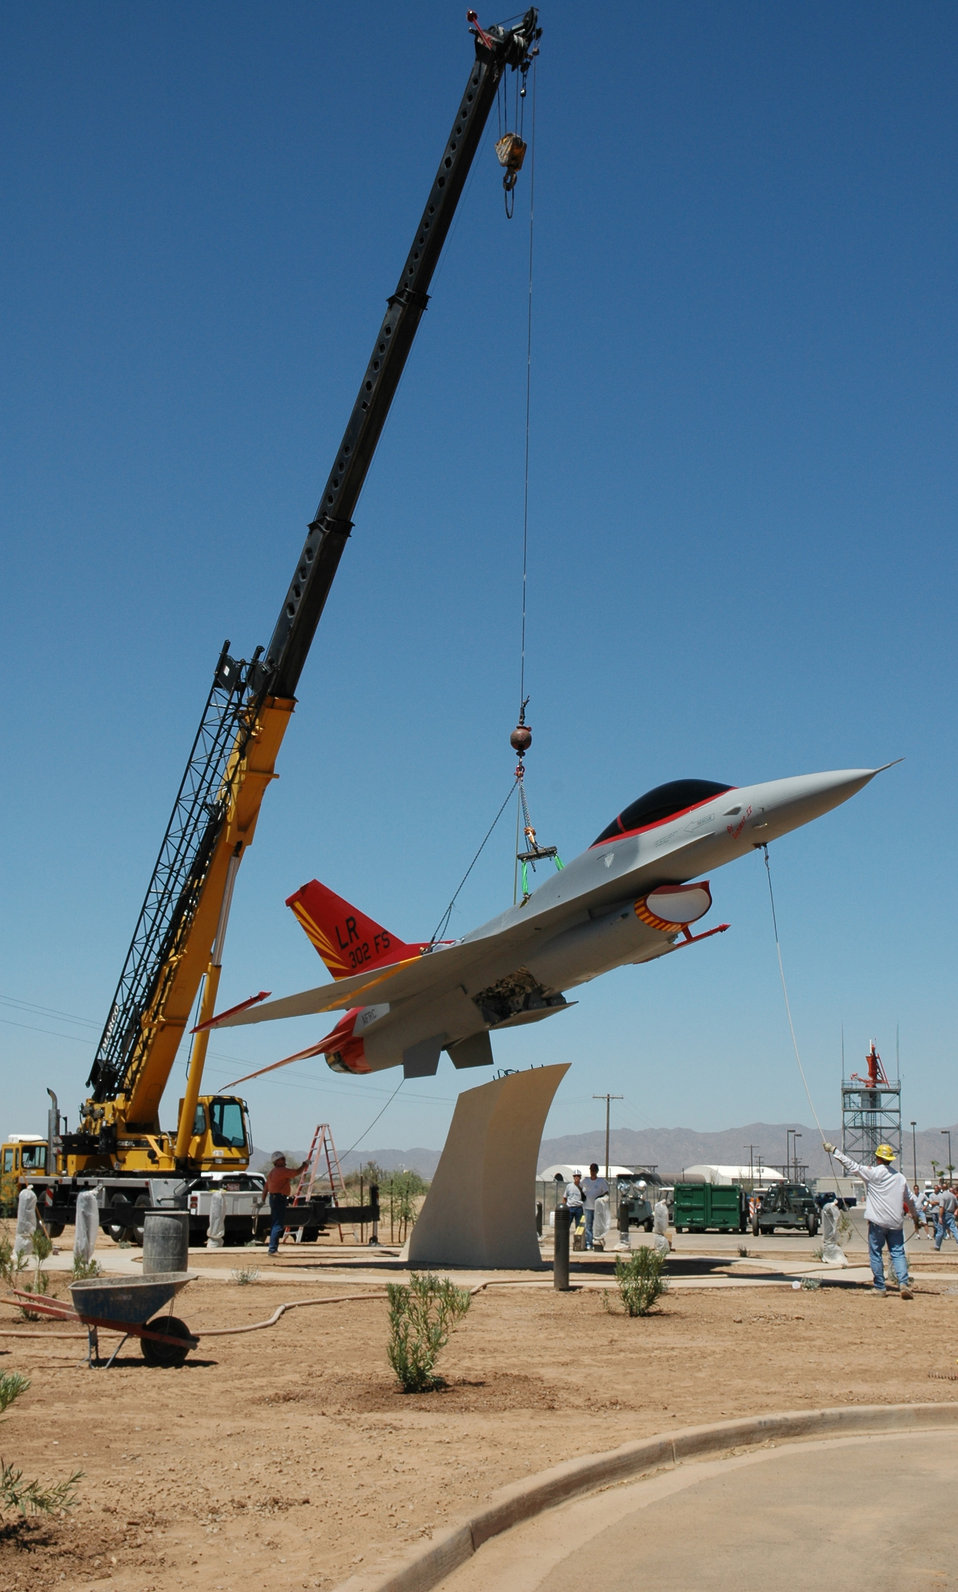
Airpark dedication honors Tuskegee Airmen

The F-16 Fighting Falcon painted with the Tuskegee Airmen's signature red tail is lowered into place July 11 in the Tuskegee Airmen Memorial Airpark in front of the 944th Fighter Wing at Luke Air Force Base, Ariz. The airpark serves as a reminder of the Tuskegee Airmen's contributions to America.